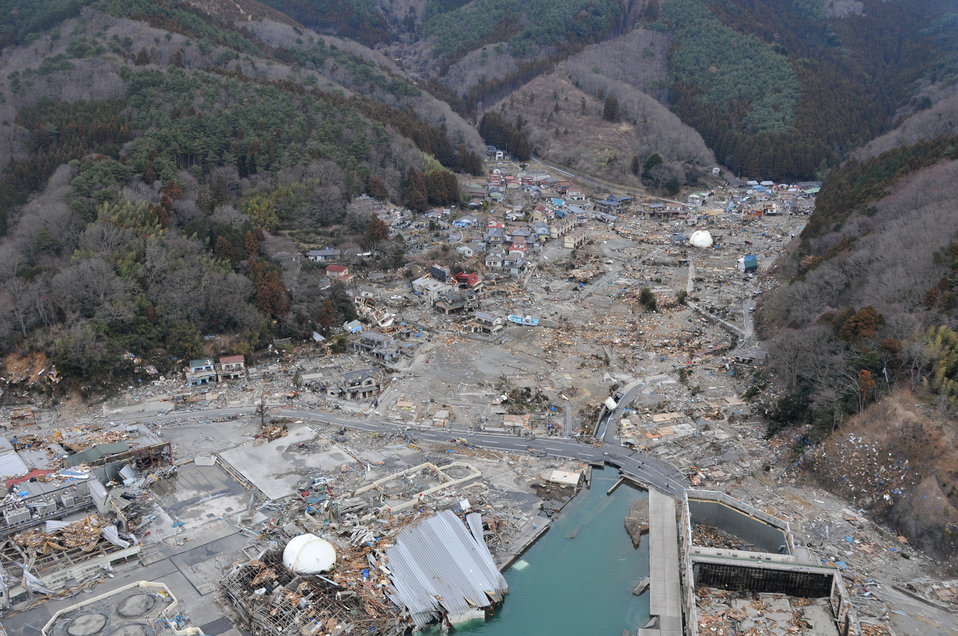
Search and rescue

An Air Force search and rescue team in an HH-60 G Pave Hawk helicopter surveys the damage as it flies over the countryside of northeastern Japan.